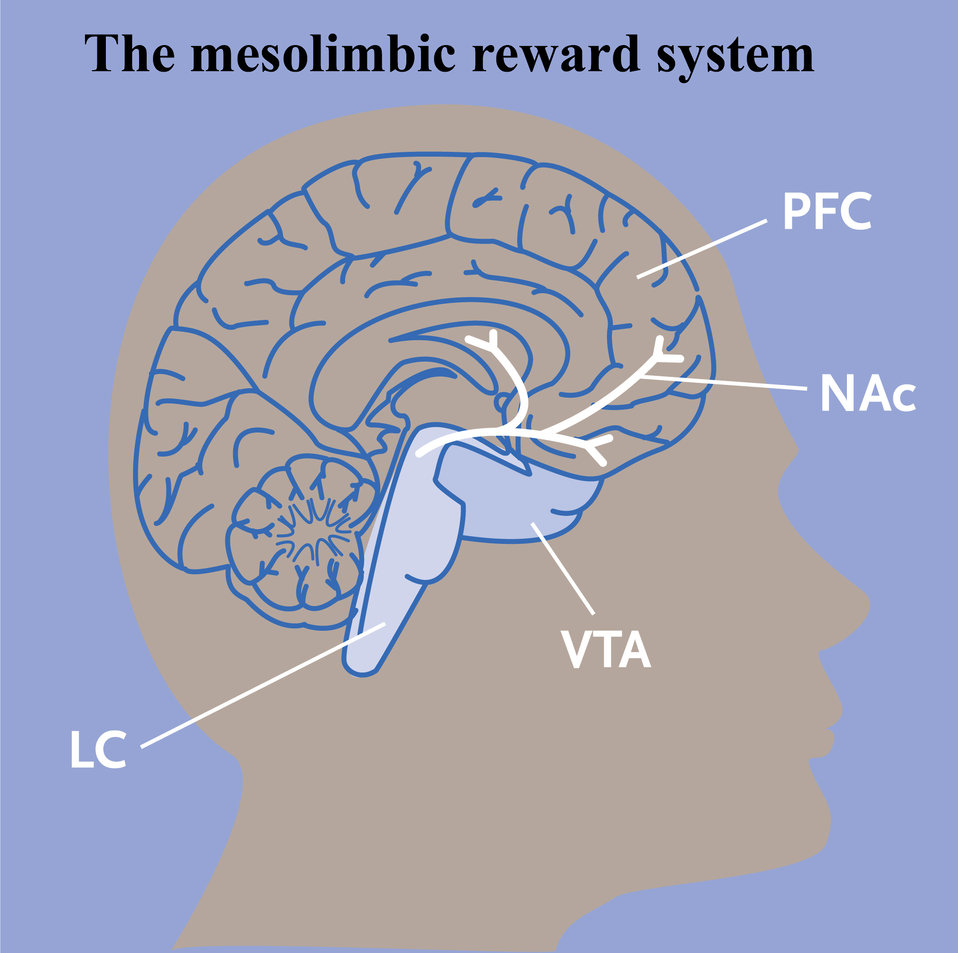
mesolimbic reward system